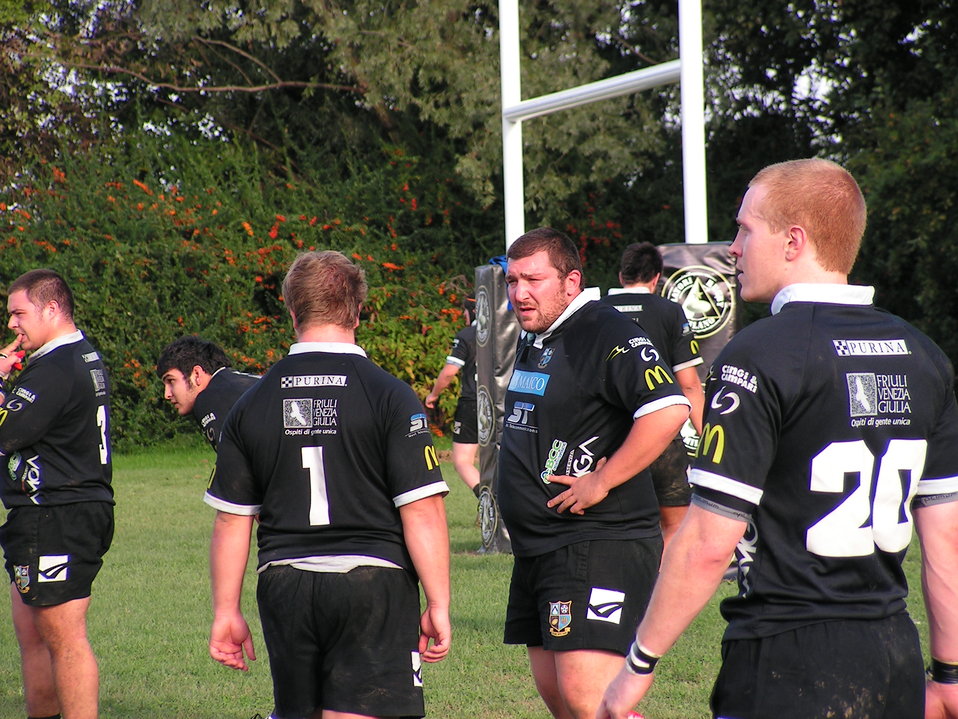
Italiano: Amatori Milano - Udine RFC Campionato italiano di rugby a 15 - Serie A1 - Seconda giornata Giocatori dell'Udine RFC